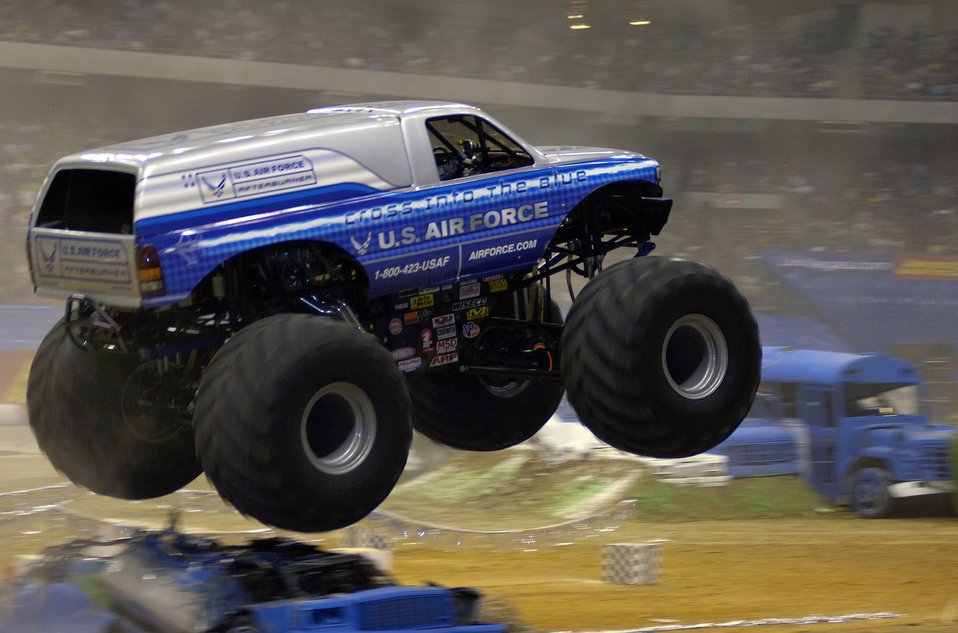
Monster recruiter

SAN ANTONIO (AFPN) -- Afterburner, the Air Force's new monster truck, flies toward the finish line at the San Antonio Monster Jam. This is only the second race in which the truck, one of the newest Air Force recruiting tools, has competed. Afterburner, driven by Paul Cohen, made the finals Jan. 14, but was edged out by Grave Digger.